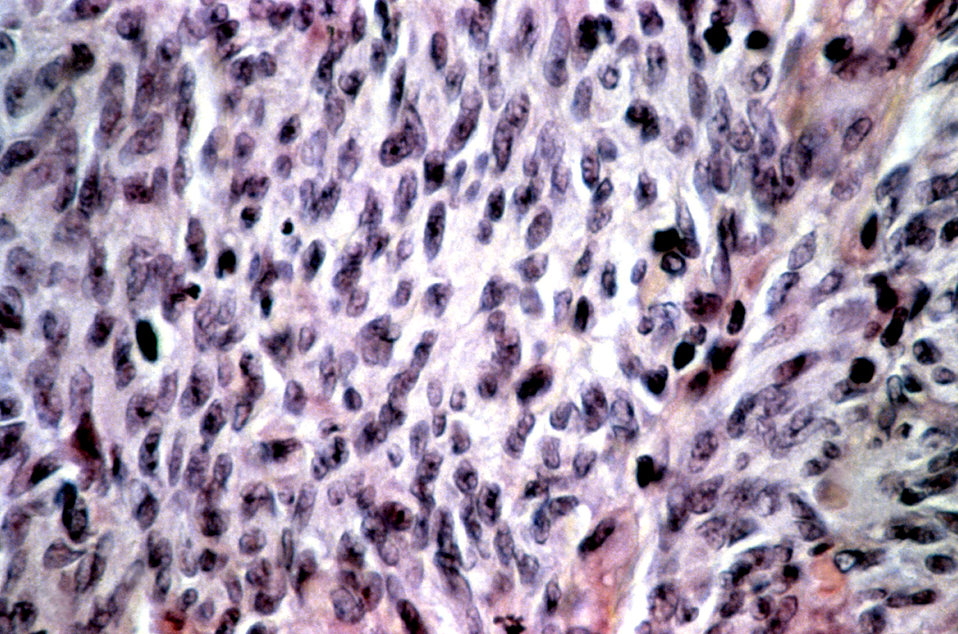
This highly magnified micrograph depicts the usual histopathologic changes found in a Kaposi's sarcoma lesion.